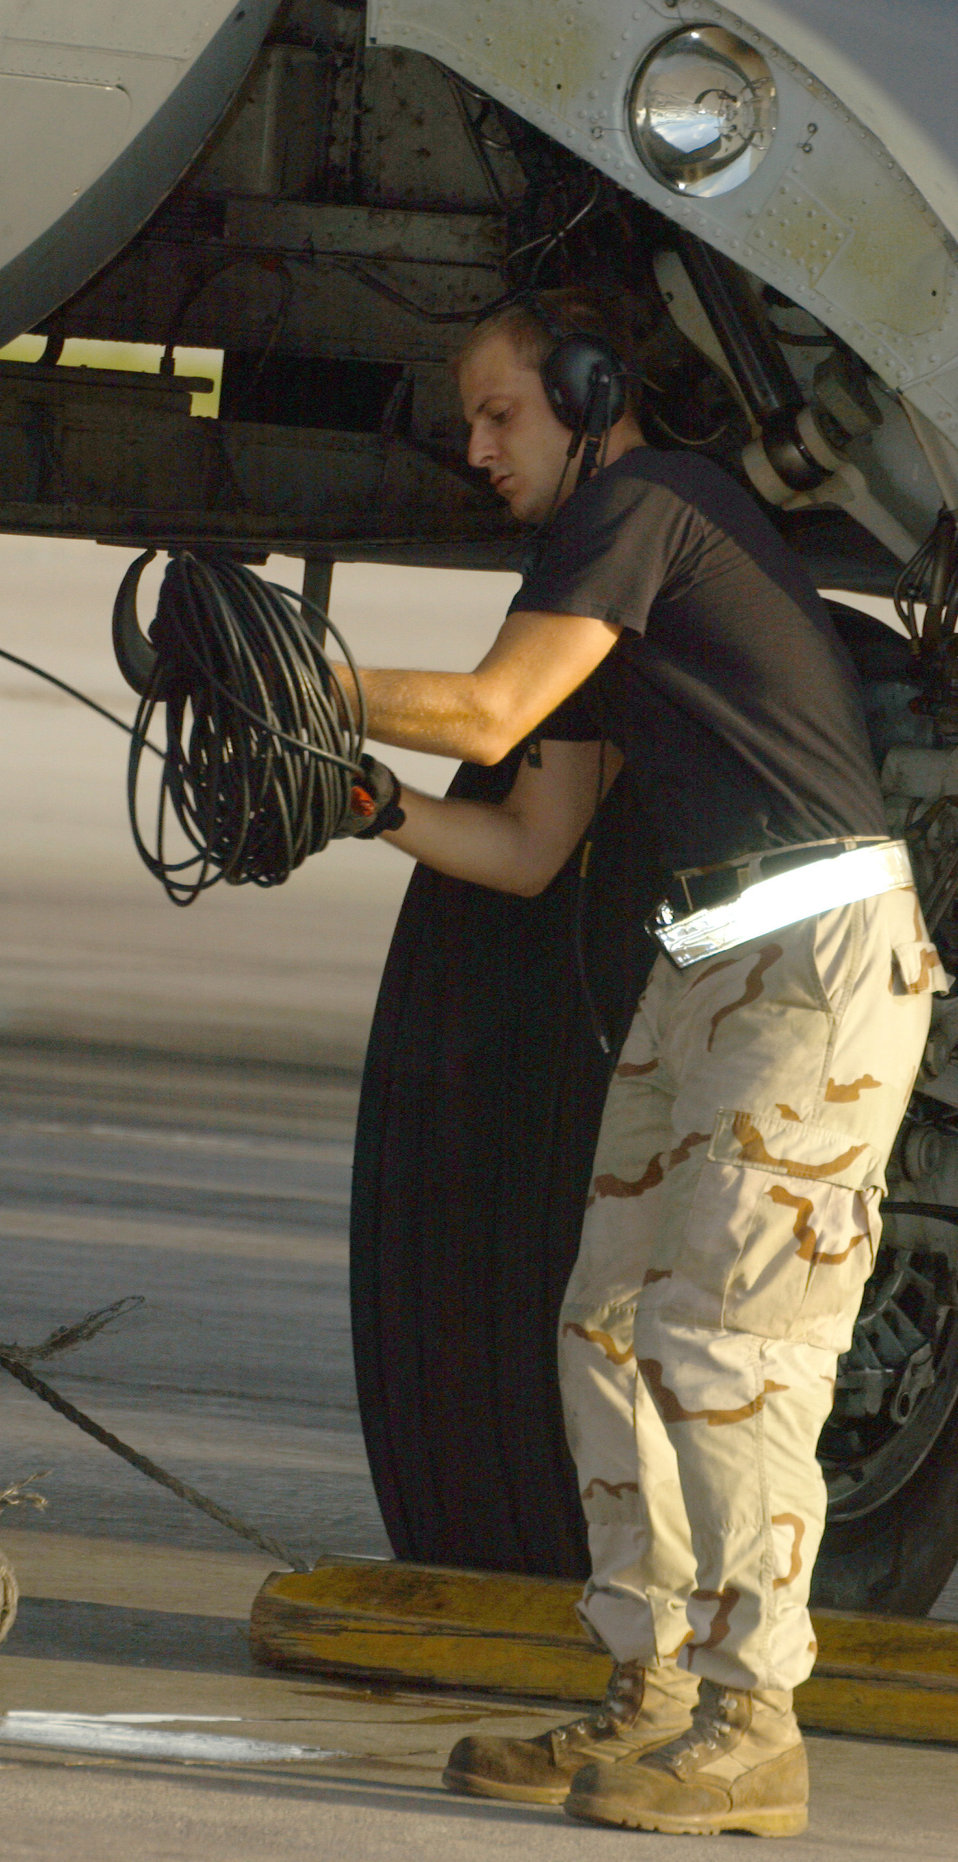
Crew chiefs turn bombers like fighters

OPERATION ENDURING FREEDOM -- Senior Airman Vincent Tripodi packs up communication equipment used to talk to the cockpit crew before launching a B-52 Stratofortress. He is a crew chief with the 40th Expeditionary Maintenance Squadron at a forward-deployed location and is from Minot Air Force Base, N.D.